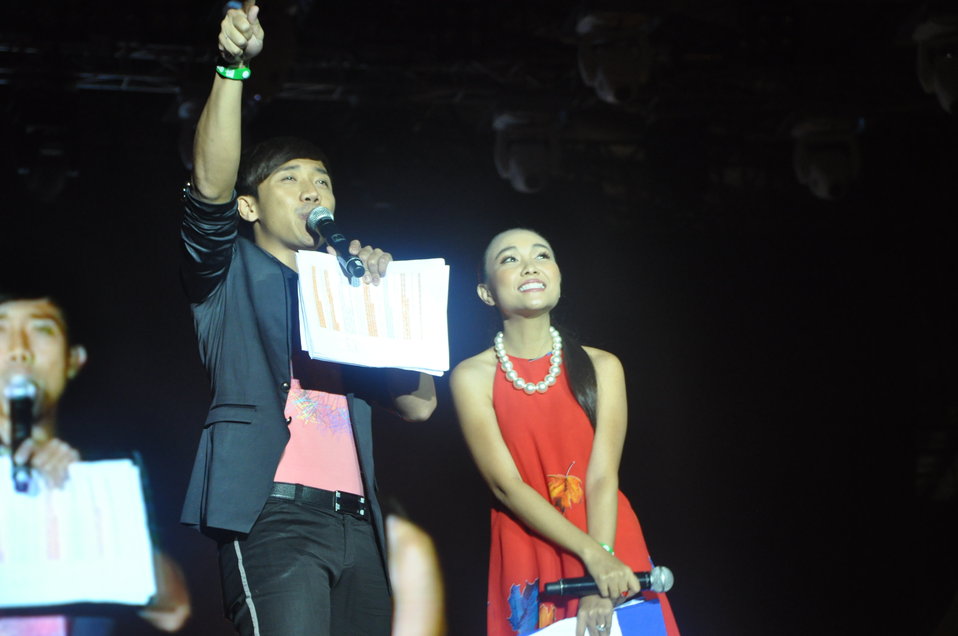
USAID co-sponors MTV EXIT concert in Hanoi against human trafficking

USAID co-sponsors MTV EXIT concert, campaign against human trafficking